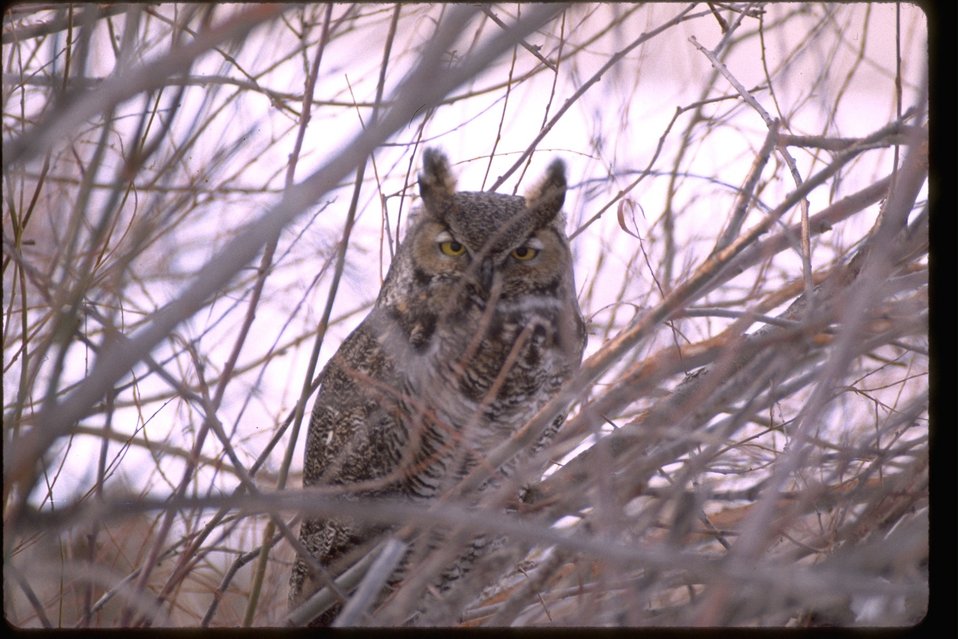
Great Horned Owl near Frenchglen, Oregon, in Harney County.